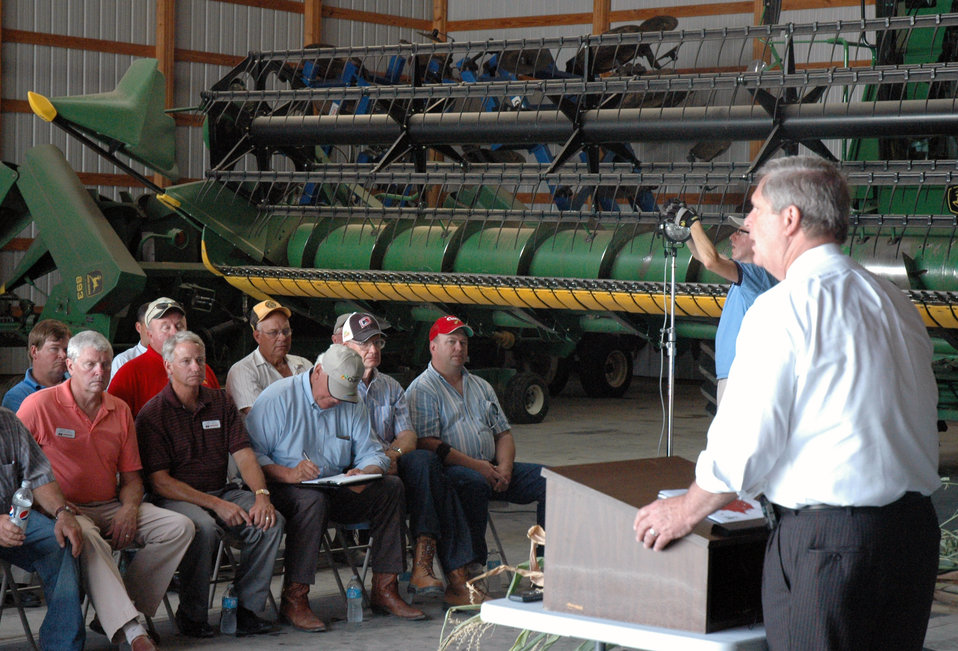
Agriculture Secretary Tom Vilsack met with producers, industry and business leaders in Prairie City, Iowa on Tuesday, July 24, 2012 to discuss the ongoing drought and USDA's efforts to assist producers.

As of July 20, the U.S. Department of Agriculture has designated 1,055 counties across the country as disaster areas due to drought. According to the most recent U.S. Drought Monitor report, 88 percent of our nation's corn and 87 percent of our soybeans are in drought-stricken areas.